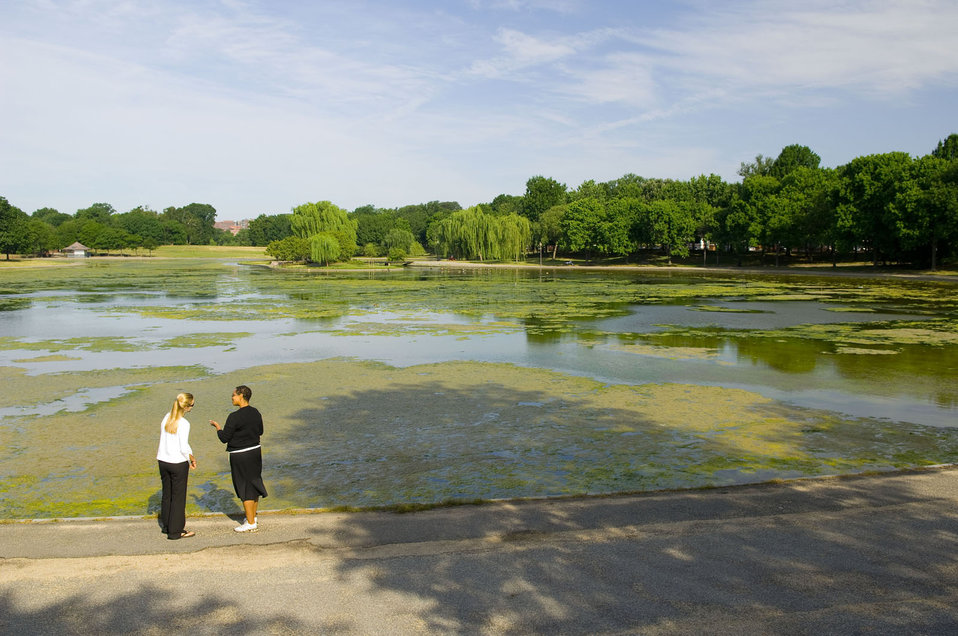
July 12, 2013 - Excess nutrients can cause thick, green muck that pollutes the water

Algal blooms, which can occur in nutrient-enriched waters, cause thick, green muck that pollutes the water and can be harmful to aquatic life, the environment, and to the economy. Some algal blooms produce toxins that are dangerous to people. People should avoid contact with waters that have harmful algal bloom advisories posted or anywhere the water is pea green, discolored, or has floating mats.